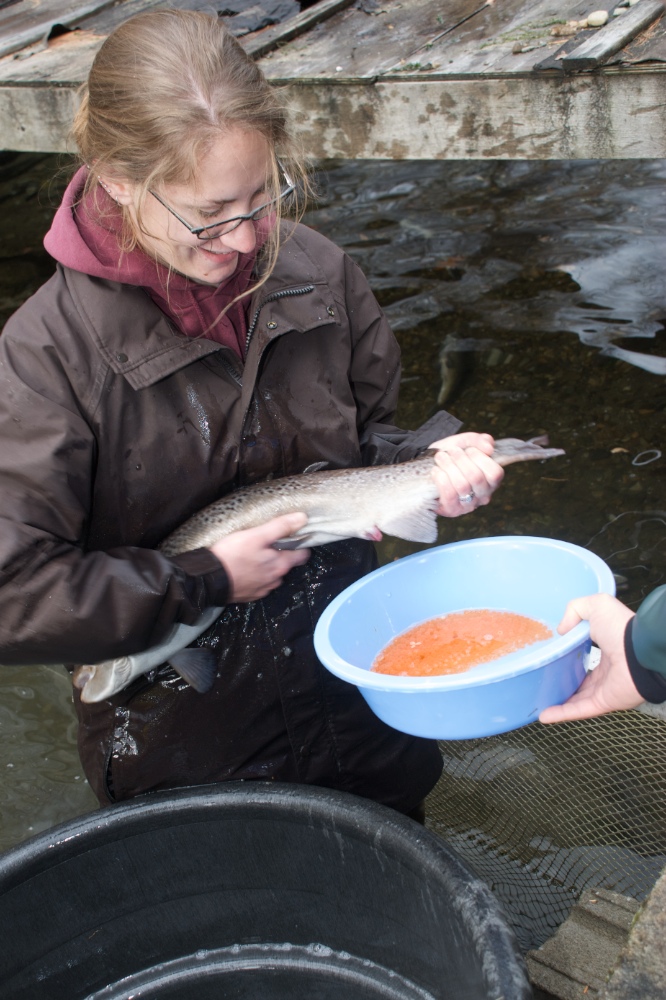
Richard Cronin National Salmon Station

Volunteers harvesting salmon eggs at the Richard Cronin National Salmon Station in Sunderland, MA.